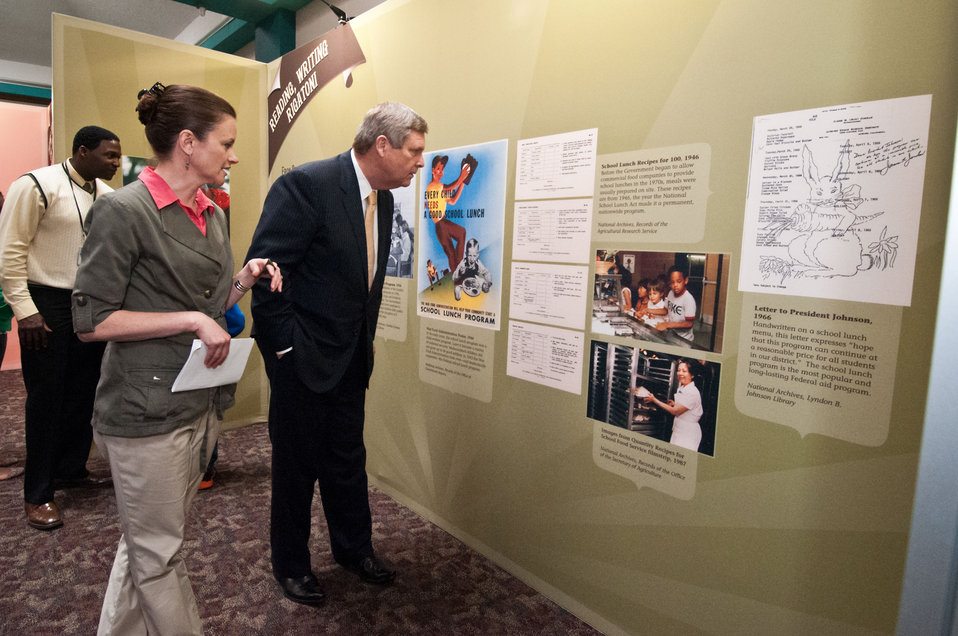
National Archives Curator Alice Kamps and Agriculture Secretary Tom Vilsack review information on the School Lunch program in the “What’s Cooking, Uncle Sam?” exhibit at the United States Department of Agriculture in Washington, D.C., on Thursday, April 26, 2012. Kamps curated the exhibit describing the history of nutrition in the United States.